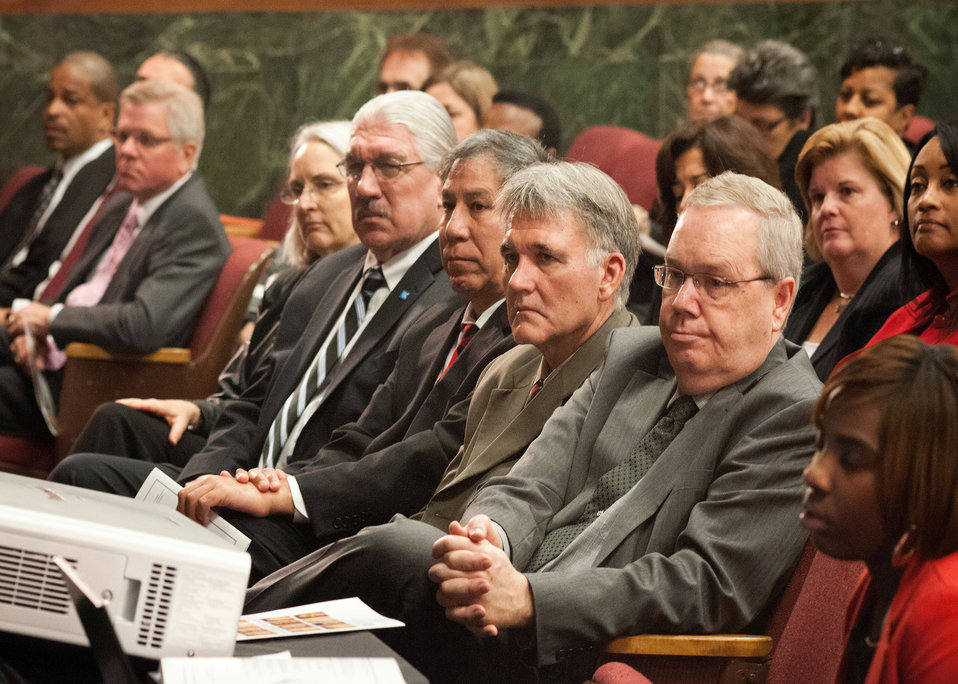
(L to R) Agriculture Deputy Undersecretary Natural Resources and Environment (NRE) Ann Mills, Agriculture Deputy Undersecretary Natural Resources and Environment (NRE) Arthur Blazer, Agriculture Undersecretary Marketing and Regulatory Programs (MRP) Ed Avalos, Agriculture Risk Management Agency (RMA) Administrator Bill Murphy, and Agriculture Under Secretary, Rural Development (RD) Dallas Tonsager listen to Agriculture Secretary Tom Vilsack address employees at the U.S. Department of Agriculture’s (USDA) Fourth Annual Cultural Transformation event held in Washington, D.C. on Tuesday, Dec. 4, 2012. The theme for the event “Faces of Cultural Transformation” Focusing on changing the way we serve our customers and cultural transformation’s benefits to employees. Secretary Vilsack spoke of the progress made during his administration’s tenure at the department and how tUSDA is cited as a positive example of cultural transformation in the workplace.